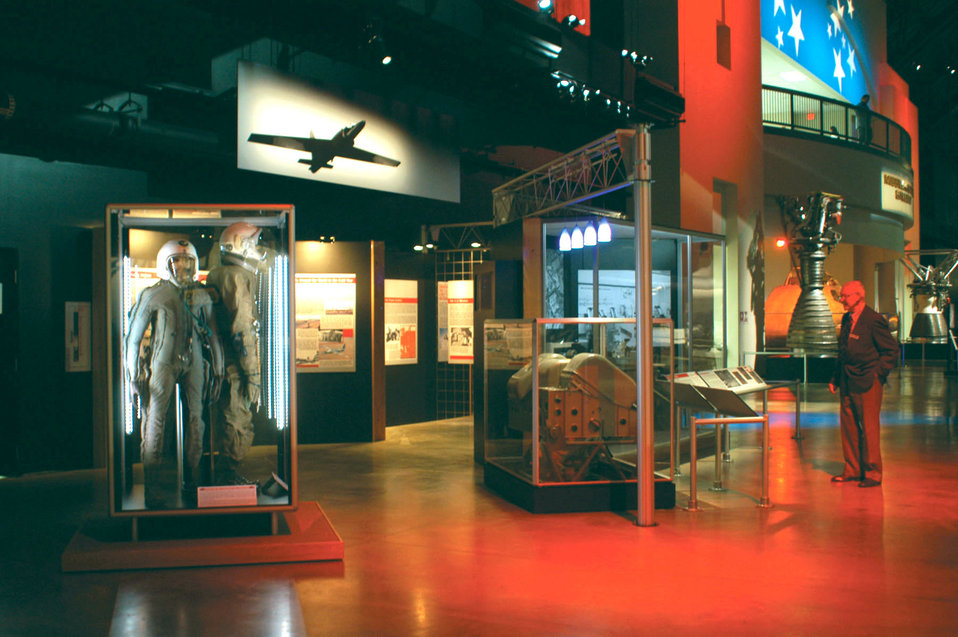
U-2, early Cold War reconnaissance exhibit open at museum

DAYTON, Ohio -- A visitor looks at the U-2 Dragon Lady exhibit in the Cold War Gallery at the National Museum of the United States Air Force here. The exhibit opened to the public June 15.